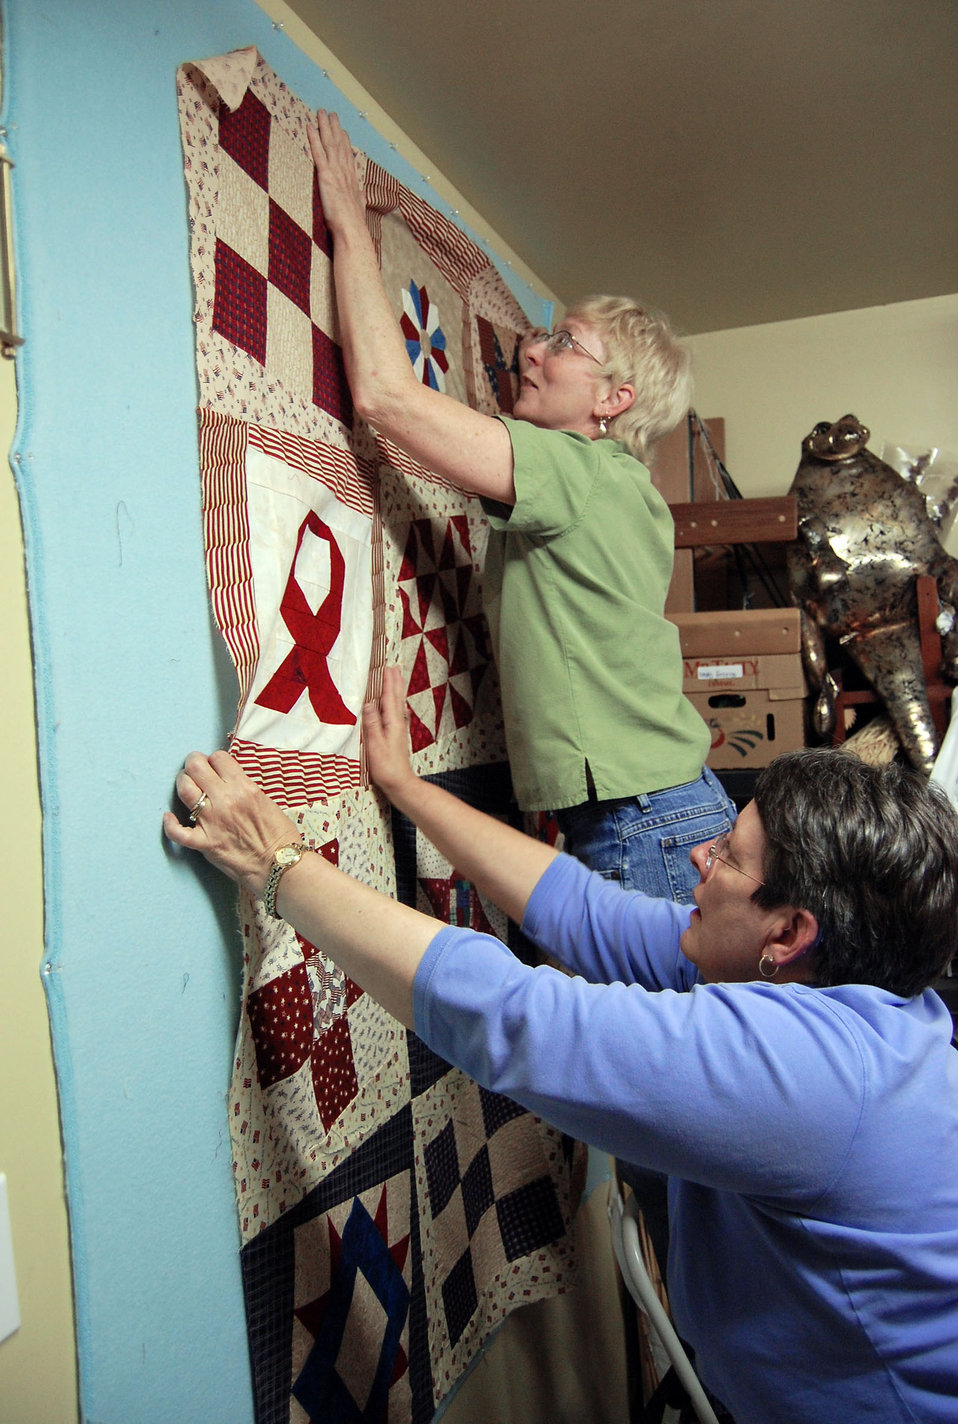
Quilts of Valor a comfort for complex wartime emotions

Lenny Truitt (standing on chair) and Laurel Braunstein place a partially complete quilt top on a design wall to see how the fabrics work together June 24 in Seaford, Del. The blue flannel fabric pinned to the wall provides the neutral color needed to best view the design colors in the quilt top before all the pieces are assembled. Ms. Truitt and Ms. Braunstein are in Truitt's home studio, where they often work together making tops for the Quilts of Valor Foundation.